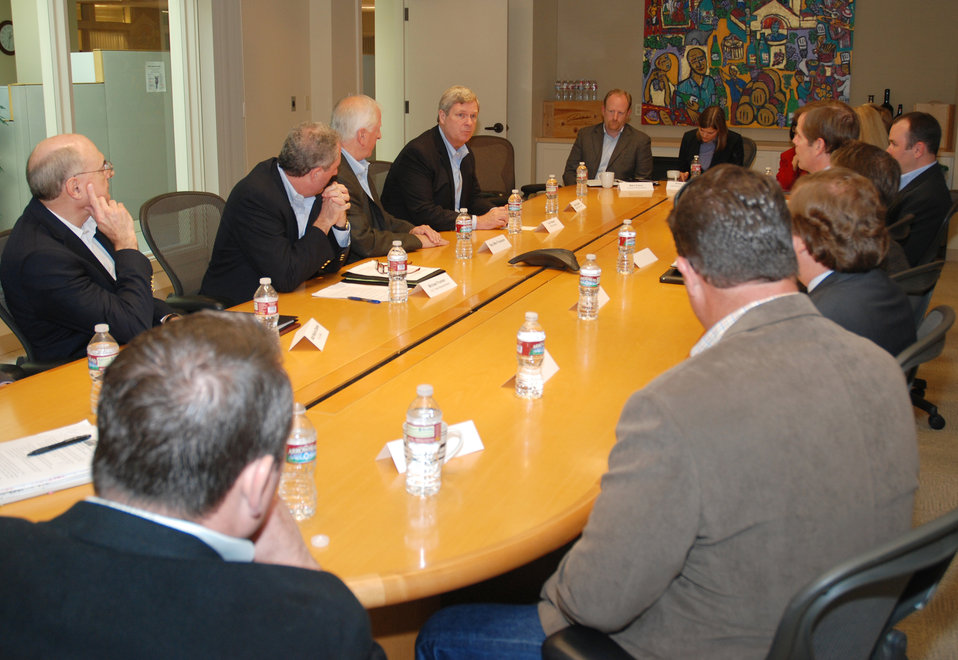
Agriculture Secretary Thomas Vilsack attends the California wine growers roundtable at Mondavi Winery in Napa, CA on Sunday, Nov. 17, 2013.